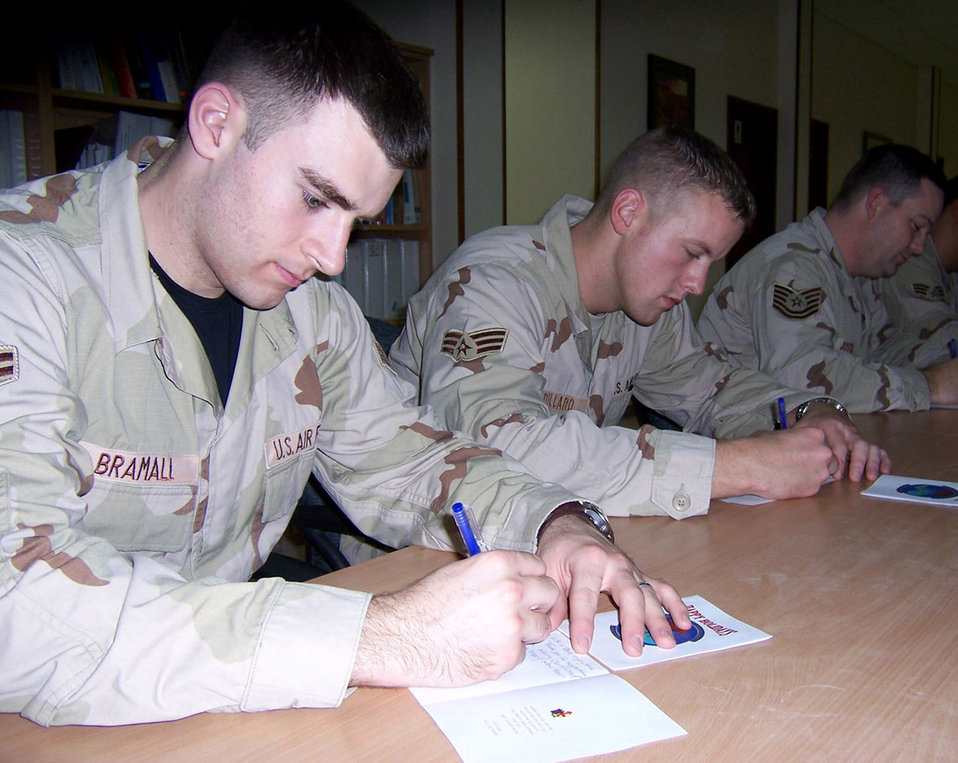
Holiday letters

Airman 1st Class David Bramall and Senior Airman Joseph Dillard write letters to Florida school children. Nearly 90 Airmen have joined in the letter-writing campaign to spread the holiday spirit by corresponding with students who wrote to them during the holiday season. Airmen Bramall and Dillard are deployed with the 379th Expeditionary Civil Engineer Squadron in Southwest Asia.